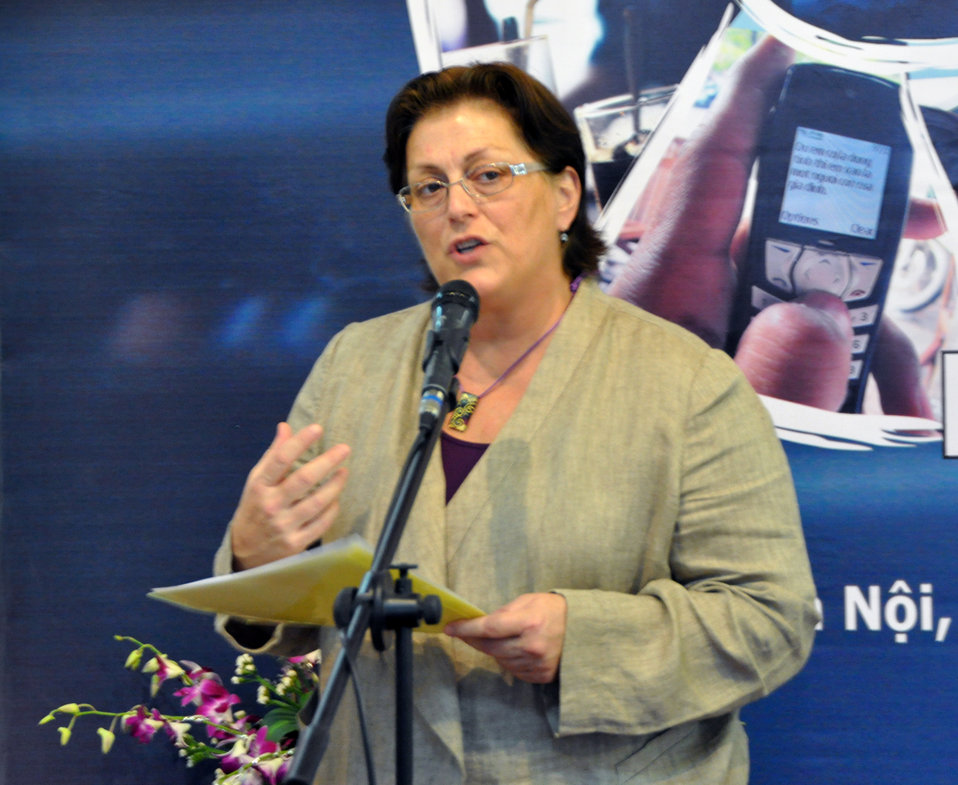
Moments in Life Exhibit: PEPFAR

U.S. Embassy Deputy Chief of Mission Claire Pierangelo speaks at the opening of the photo exhibit in Hanoi.